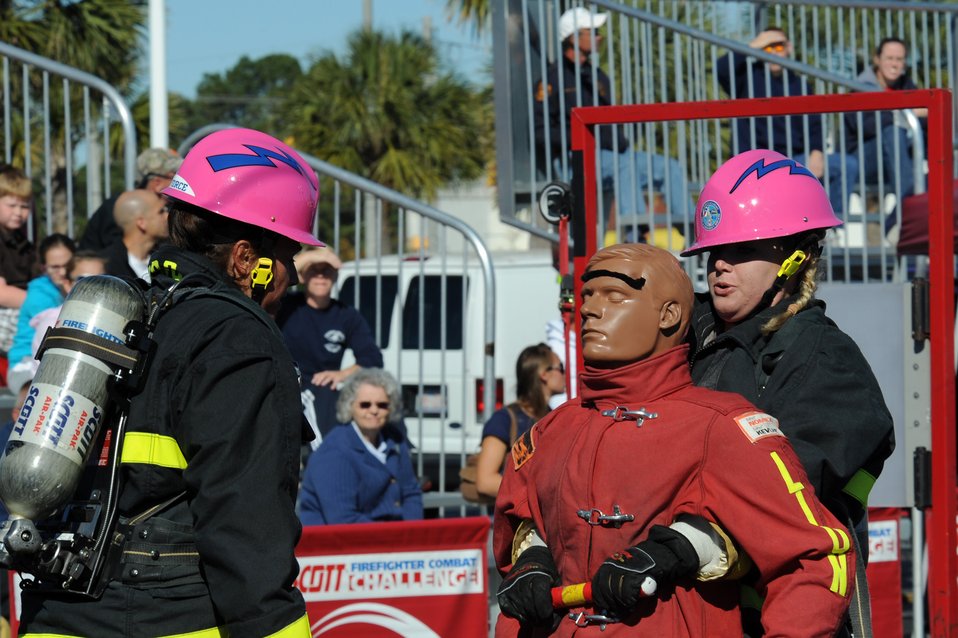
Air Force firefighters showcase skills in world competition

Senior Airman Jessica Morehouse pulls a 175-pound dummy as she competes in the team tandem event at the Scott Firefighter Combat Challenge in Myrtle Beach, S.C., on Nov. 13, 2010. Airman Morehouse is assigned to the Air Force Academy, Colorado Springs, Colo.